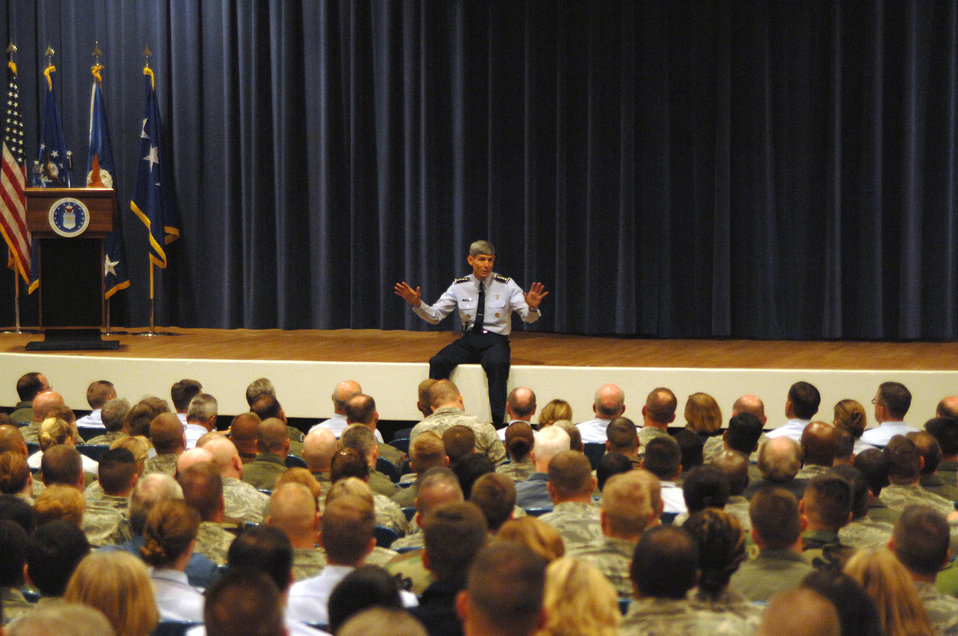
Air Force Chief of Staff defines standard of excellence

Gen. Norton A. Schwartz, Chief of Staff of the Air Force, addresses questions from Peterson Air Force Base, Colo., Airmen during his Sept. 2 visit. One of his key messages is that the Air Force must go back to basics.